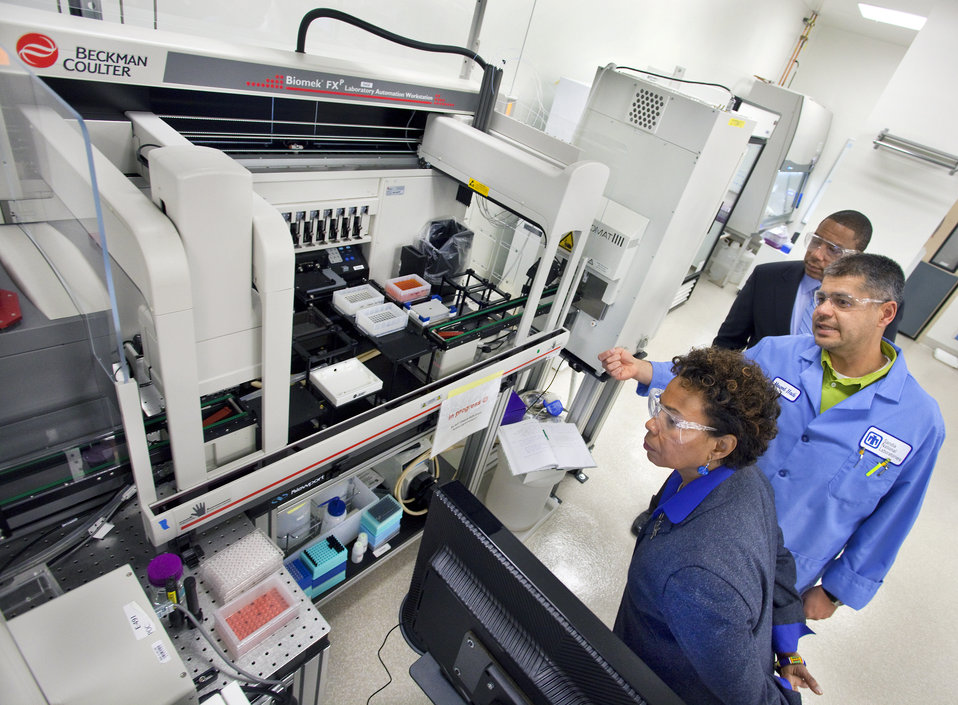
Congresswoman Barbara Lee and her top district staff toured the Joint Bioenergy Institute (JBEI).

The Congresswoman met scientists and students working in the Institute's biomass deconstruction and fuel synthesis research divisions.